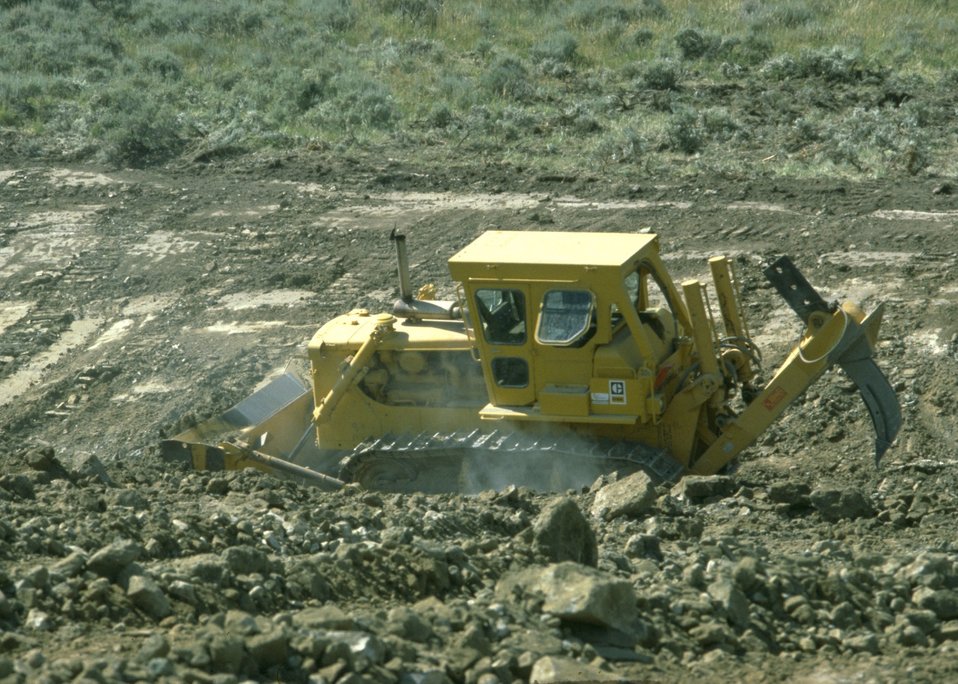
Bulldozing an area for construction.